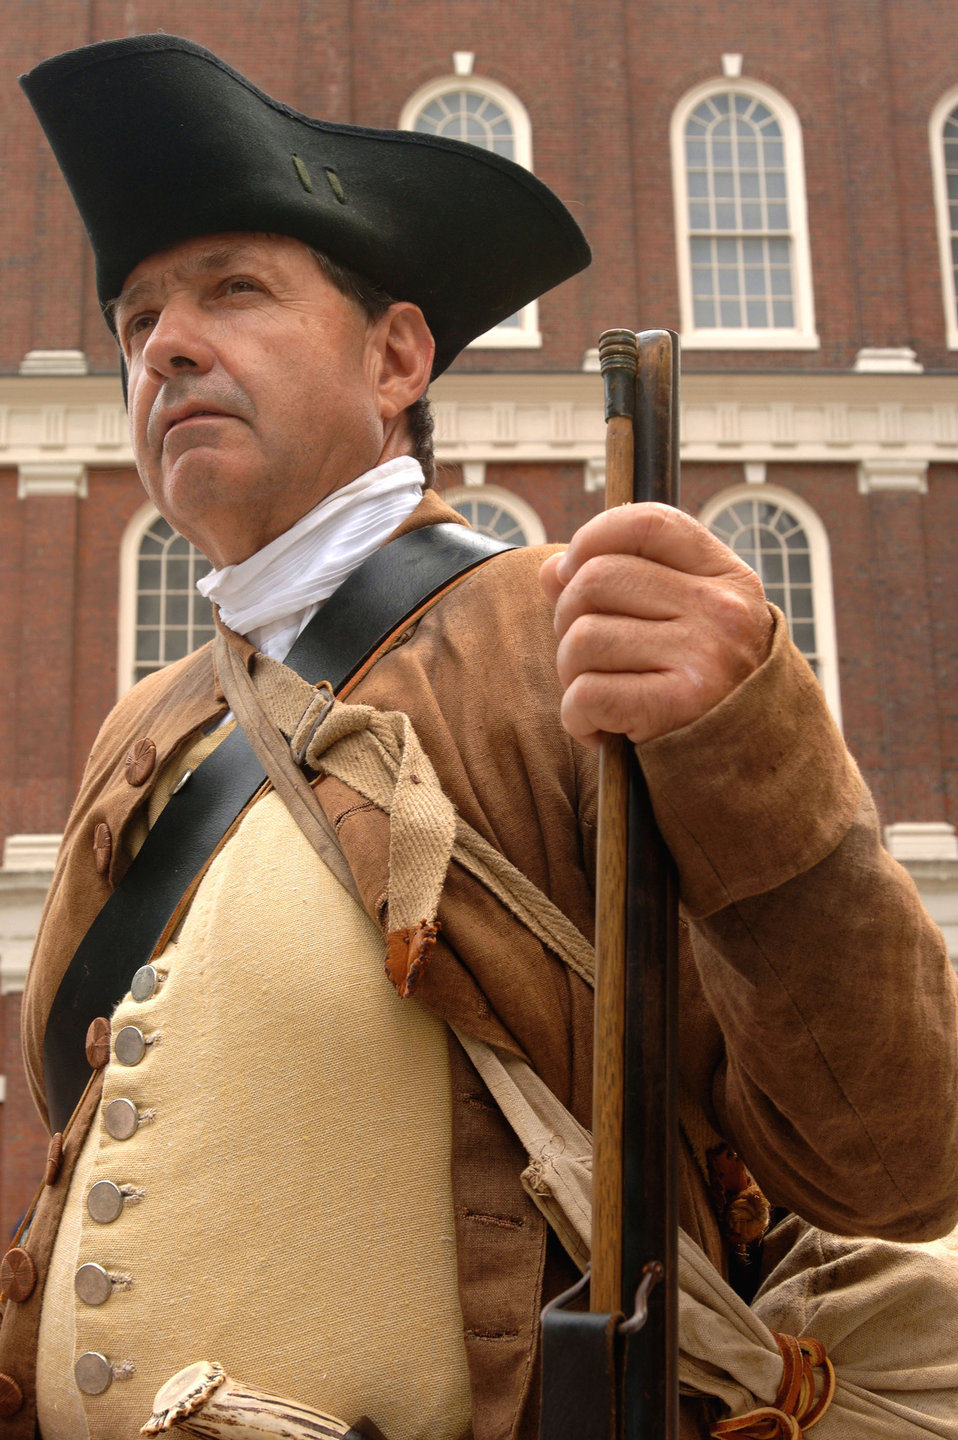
Boston proclamation party gets Air Force Week rolling

Marine veteran David Jennings from Massachusetts reenacts the dress of a Revolutionary War Minuteman during a proclamation ceremony for Air Force Week New England in front of historic Faneuil Hall in downtown Boston Aug. 17. Minuteman is a term to describe militia men who are ready for battle in a minute's notice.